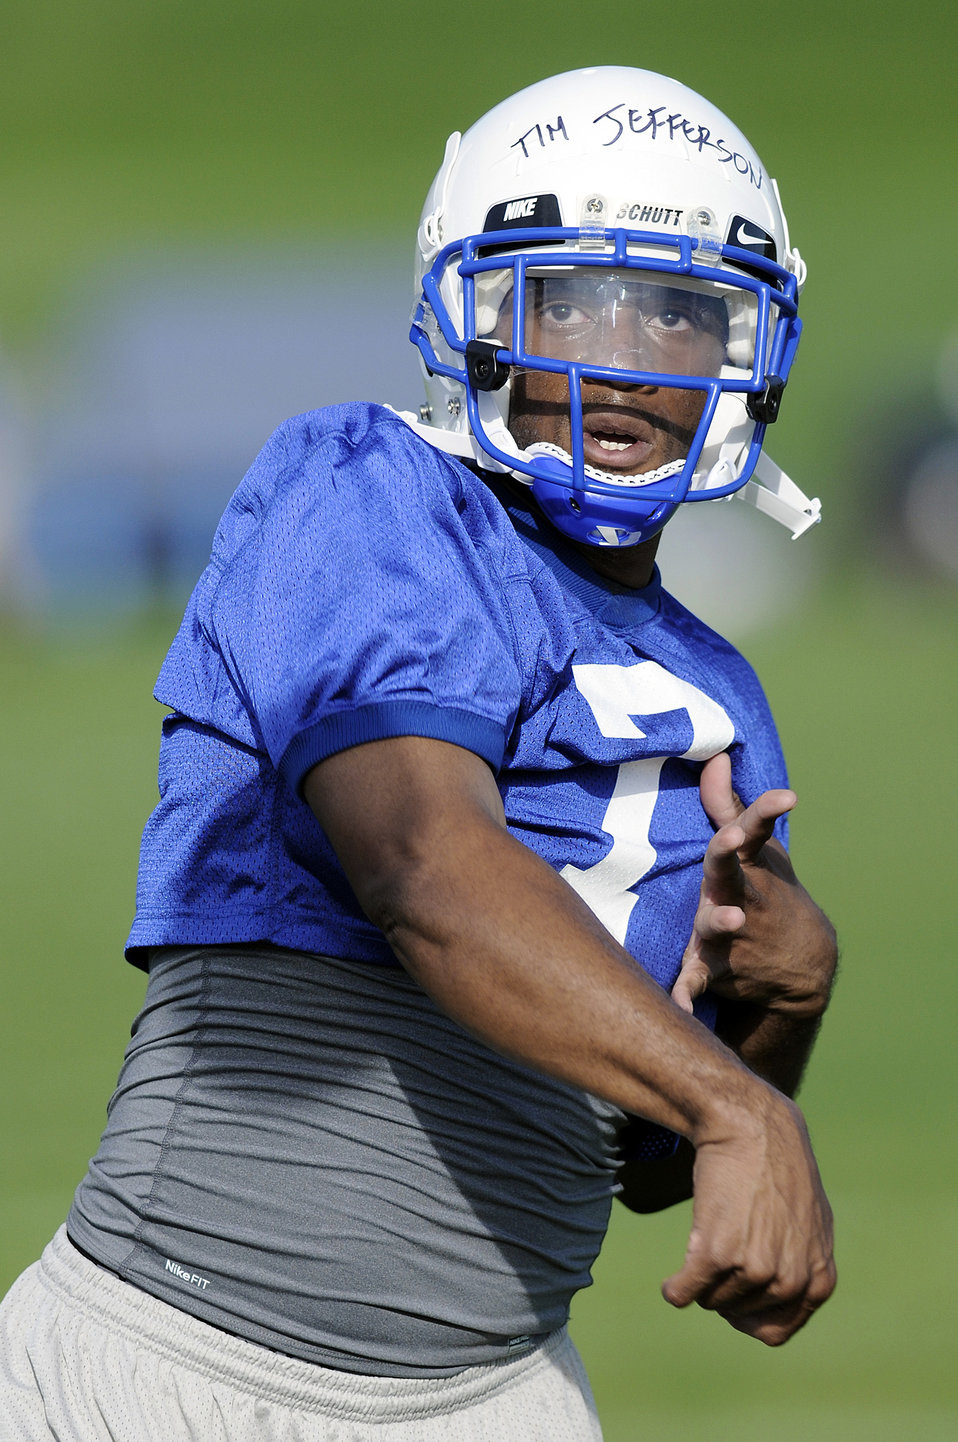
Academy football drills

Air Force Academy Sophomore Tim Jefferson watches the flight of the football during football practice Aug. 4 at the U.S. Air Force Academy near Colorado Springs, Colo. Jefferson is competing for the starting quarterback position with fellow sophomores Asher Clark and Connor Dietz. Jefferson earned Mountain West Conference Freshman of the Year honors in 2008 after taking over as the starter in the week six of the season and leading the Falcons to five straight victories.